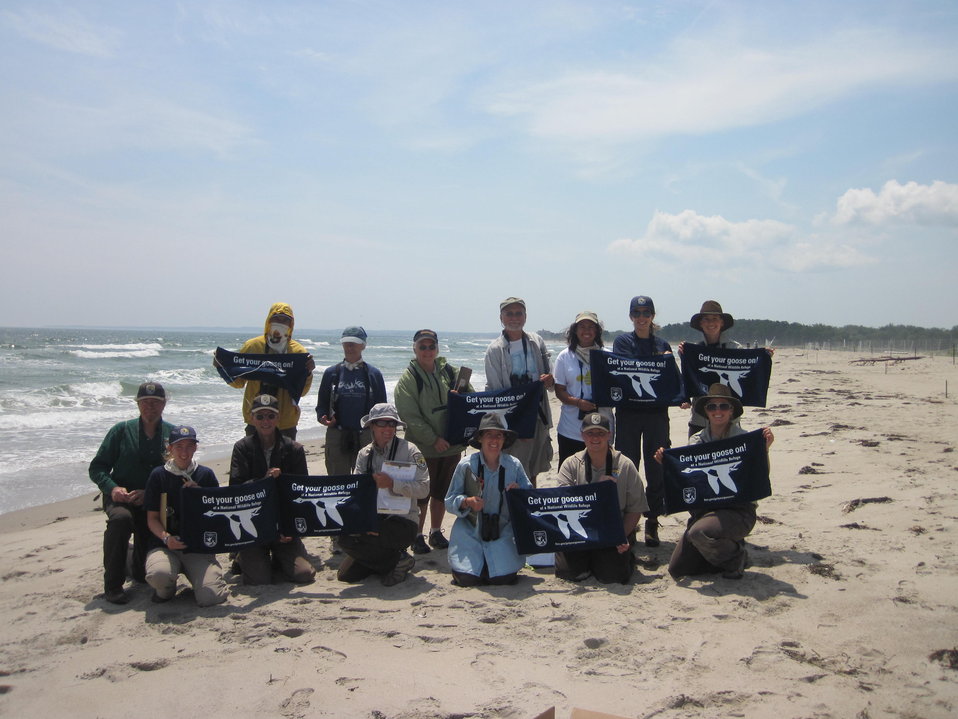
Get Your Goose On!

Post least tern survey. Top row, left: Ryan Robert, Nancy McReel, Sue Keefer, Steve Norris, Sofia Poonawala, Annie Gilmore, Charlotte Thurston. Bottom, left: Ward Feurt, Brynna Bolger, David Tibbetts, Lindsey Fenderson, Lynn Wolfe, Karrie Schwaab, Kaiti Titherington.